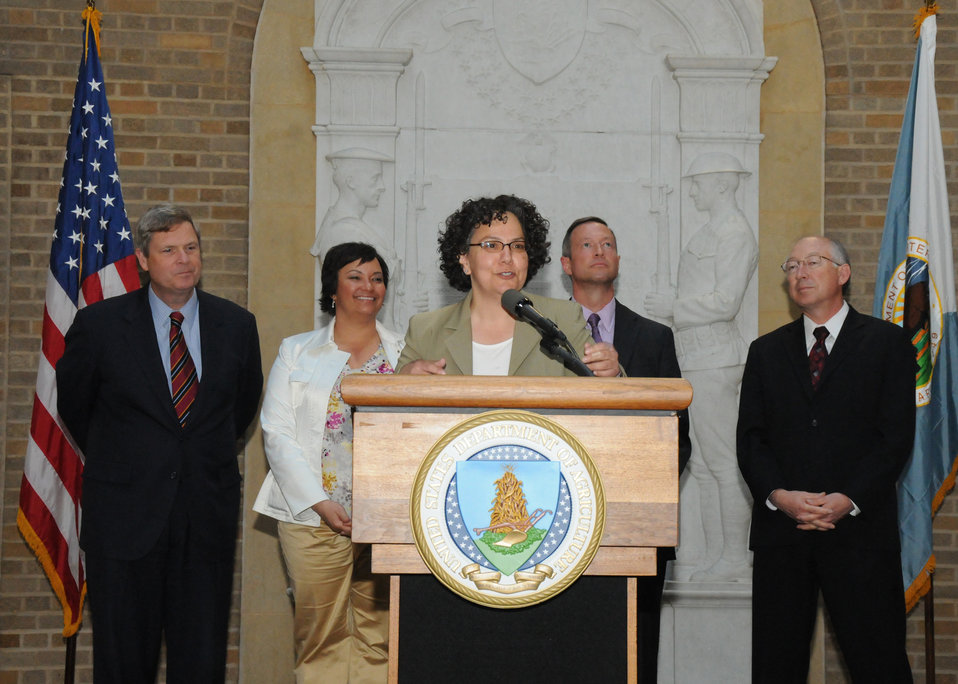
Council on Environmental Quality Chair Nancy Sutley makes remarks at the White House Conference on America’s Great Outdoors reception held at the Department of Agriculture on Thursday, April 15, 2010. (L to R in background Agriculture Secretary Tom Vilsack, Environmental Protection Agency Administrator Lisa Jackson, Maryland Governor Martin O’Malley, and Interior Secretary Ken Salazar) USDA photo 10di1315-62